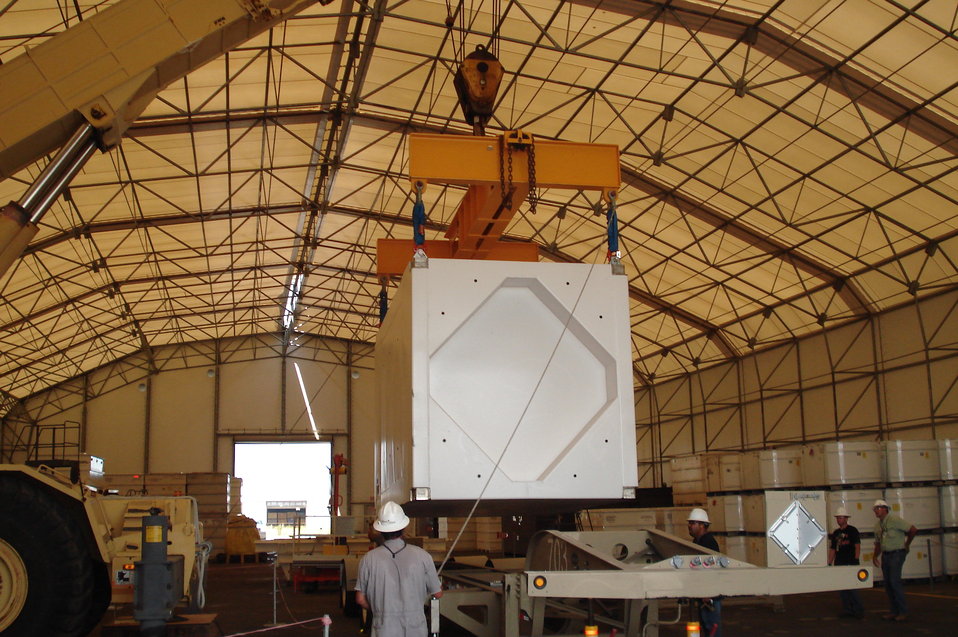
TRUPACT-III at Savannah

For the first time at the Savannah River Site, the TRUPACT-III shipping package exits through the gates of the site in August 2011, en route to the Waste Isolation Pilot Plant.